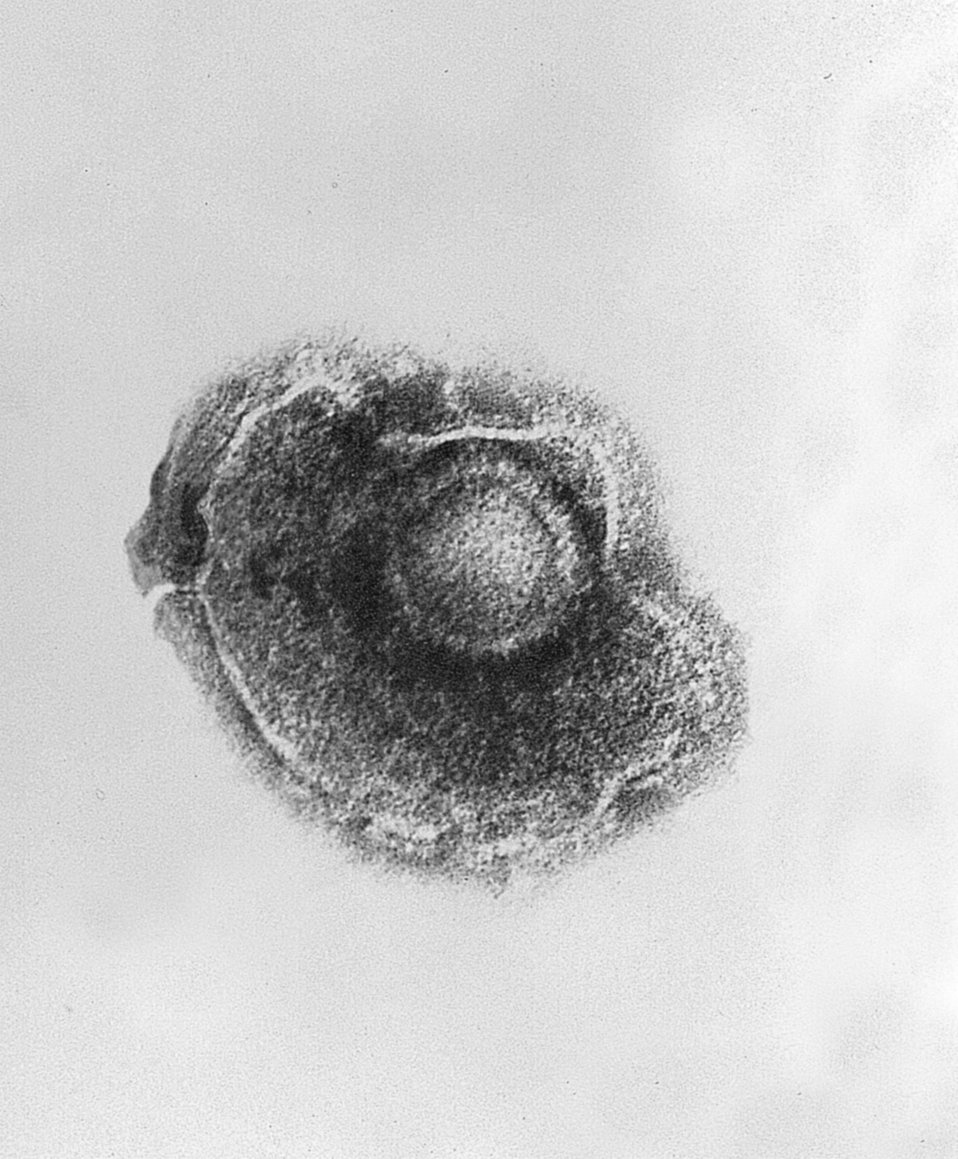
Electron micrograph of a Varicella (Chickenpox) Virus.